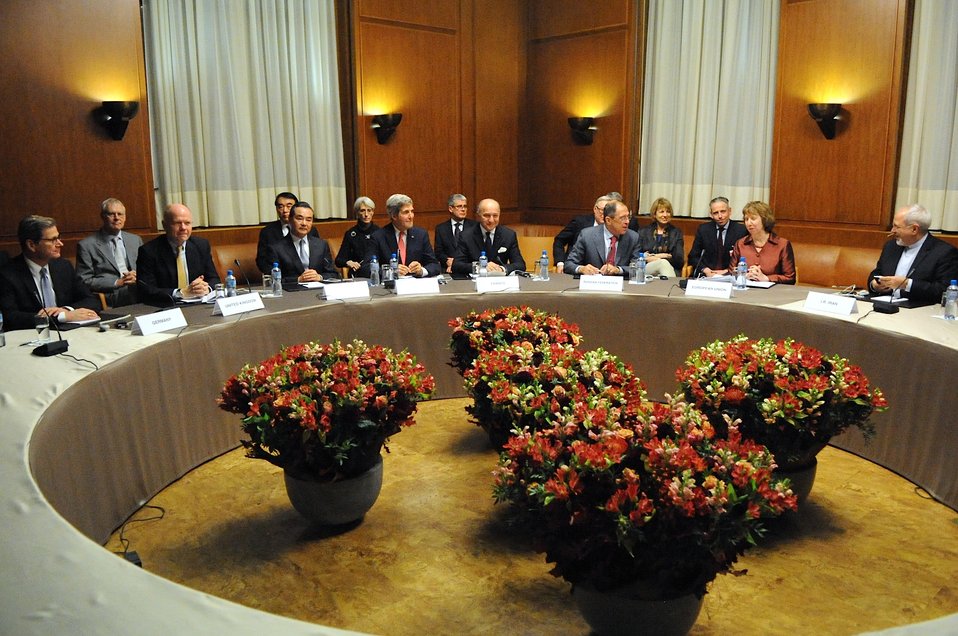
P5 1 Talks With Iran in Geneva, Switzerland

U.S. Secretary of State John Kerry sits sits with his fellow P5 1 foreign ministers -- as well as European Union High Representative Catherine Ashton and Iranian Foreign Minister Javad Zarif, far right -- at the United Nations Headquarters in Geneva, Switzerland, after the group concluded negotiations about Iran's nuclear capabilities on November 24, 2013.